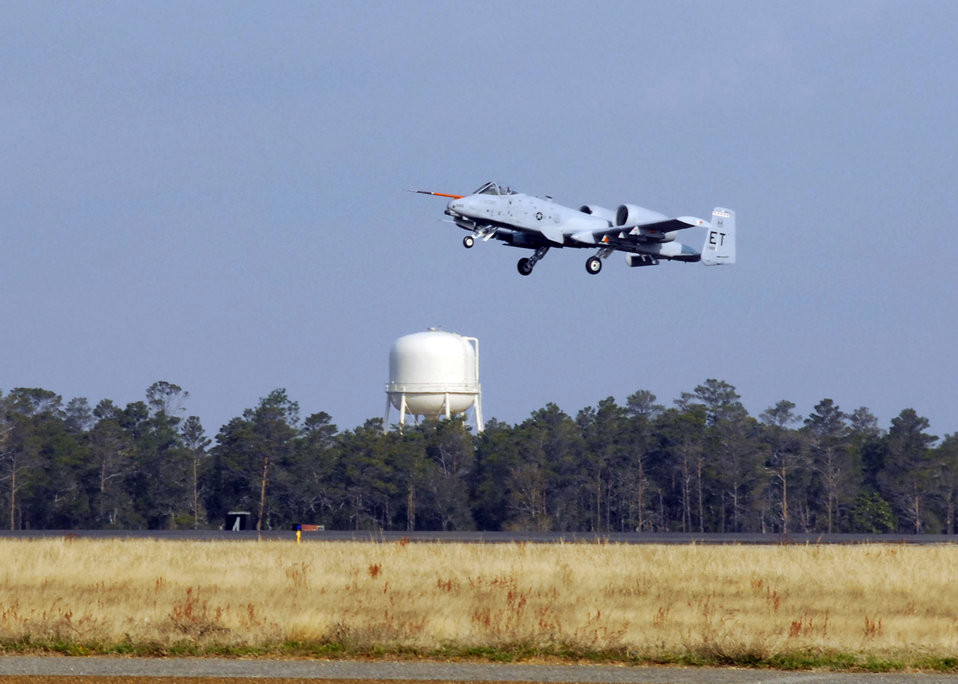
Biofuel flight

An A-10C Thunderbolt II takes off from Eglin Air Force Base, Fla., March 25, 2010, marking the first flight of an aircraft powered solely by a biomass-derived jet fuel blend. The A-10 was fueled with a 50/50 blend of Hydrotreated Renewable Jet and JP-8.